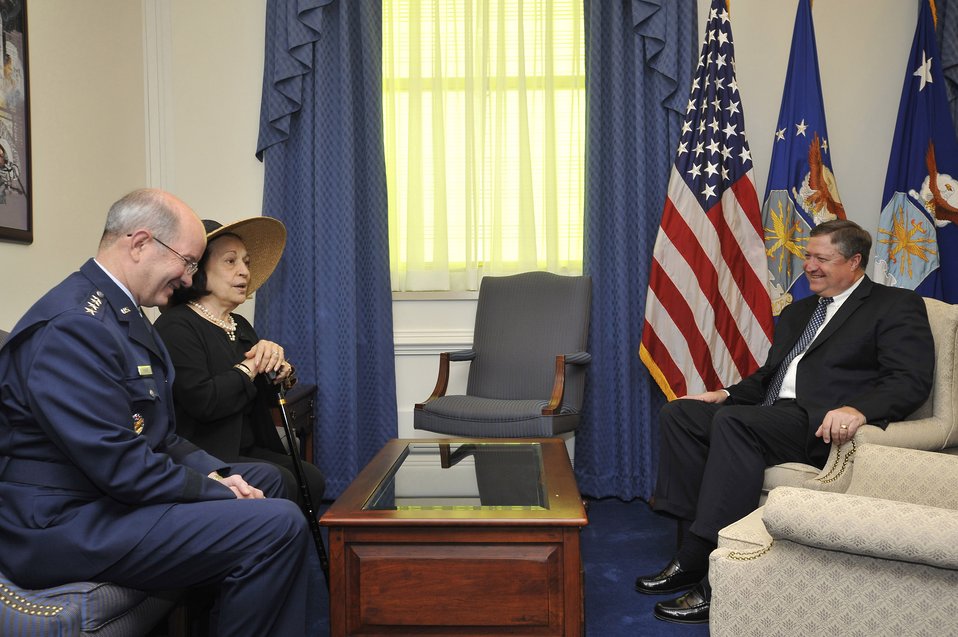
Officials unveil portrait of AF pioneer

Joni James, widow of Gen. Bernard Schriever, speaks with Air Force Vice Chief of Staff Gen. Duncan J. McNabb and acting Air Force Secretary Michael B. Donley during an office call prior to the unveiling of a portrait of her late husband July 8 at the Pentagon. The portrait, a pencil drawing by Air Force visual information specialist Thomas Segars, will hang permanently as a memorial to General Schriever.